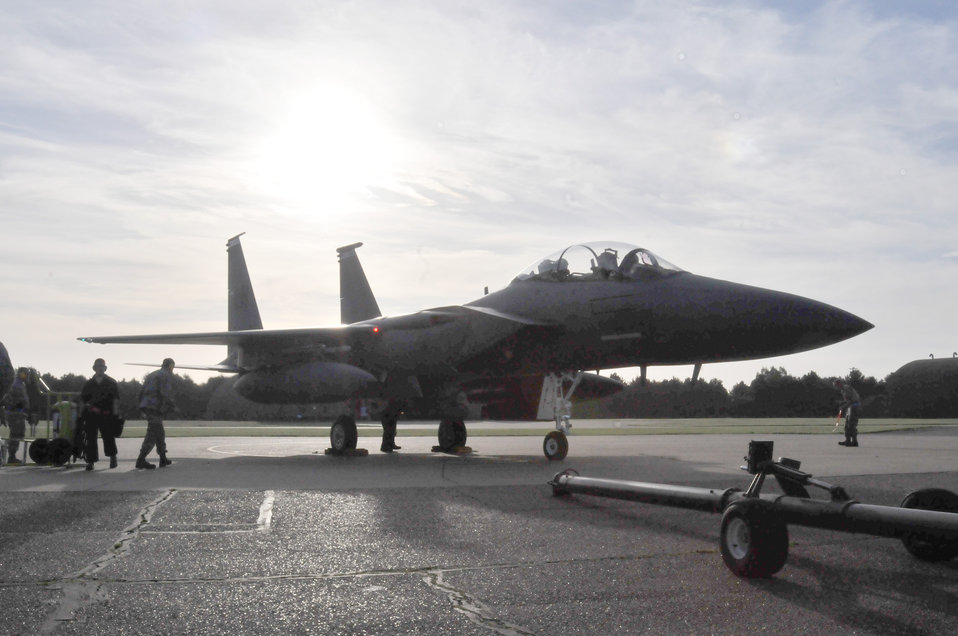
Lakenheath set-piece demonstration

An F-15E Strike Eagle sits on the flightline Oct. 7, 2010, at Royal Air Force Lakenheath, England. This aircraft was used for the first of four set-piece demonstrations for aircraft regeneration in preparation for the operational readiness inspection.